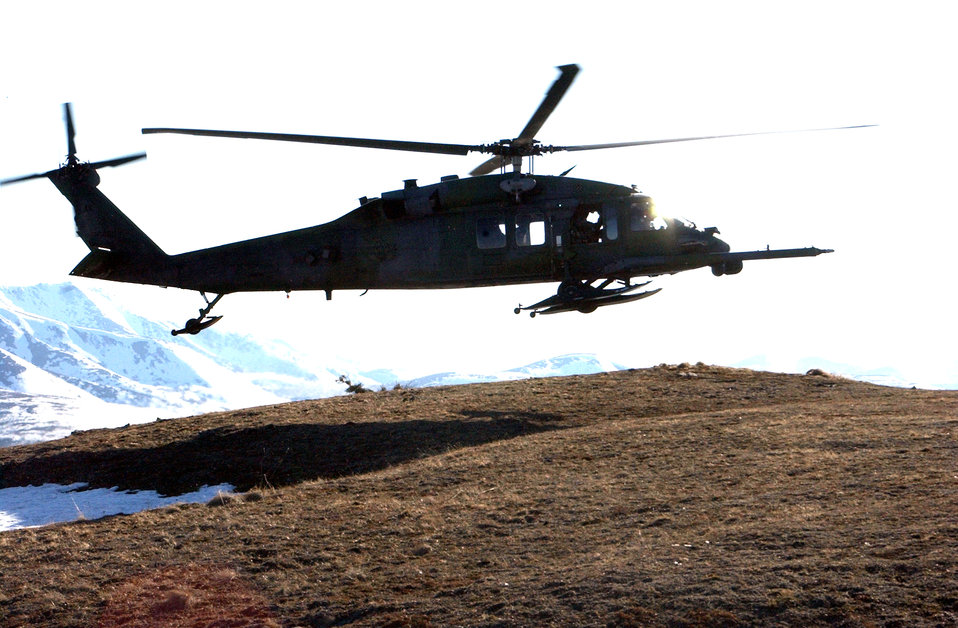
Cope Thunder training

WHITE MOUNTAINS, Alaska -- An HH-60G Pave Hawk helicopter lands while on airborne alert during Exercise Cope Thunder here April 28. The annual exercise involves nine units and about 600 Airmen and 50 aircraft from the Pacific Air Forces, Air Combat Command and the Alaska Air National Guard. The helicopters are assigned to the 210th Rescue Squadron's Detachment 1 at nearby Eielson Air Force Base.